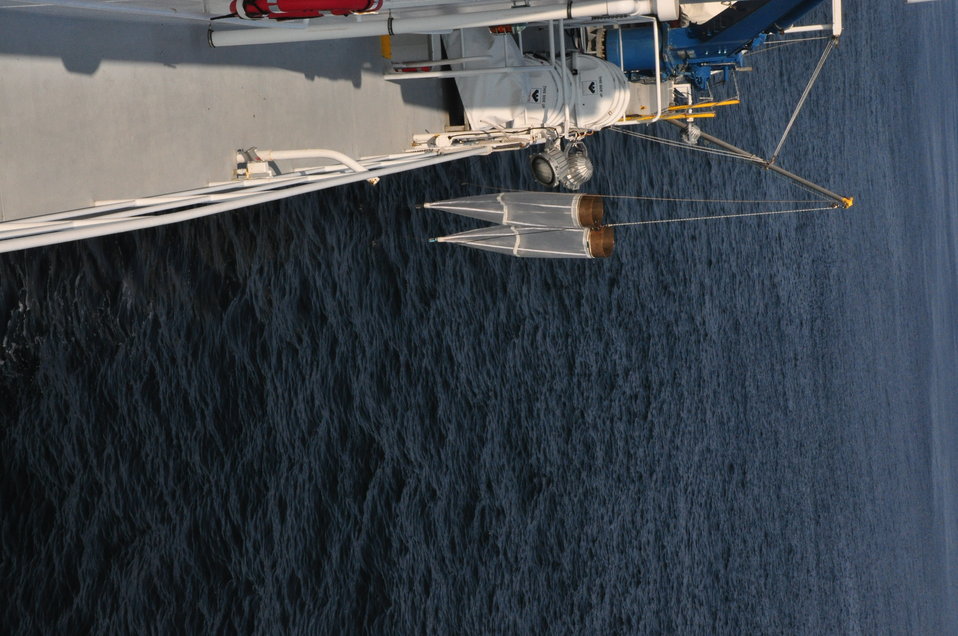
August 2009, View from the top deck of the plankton nets